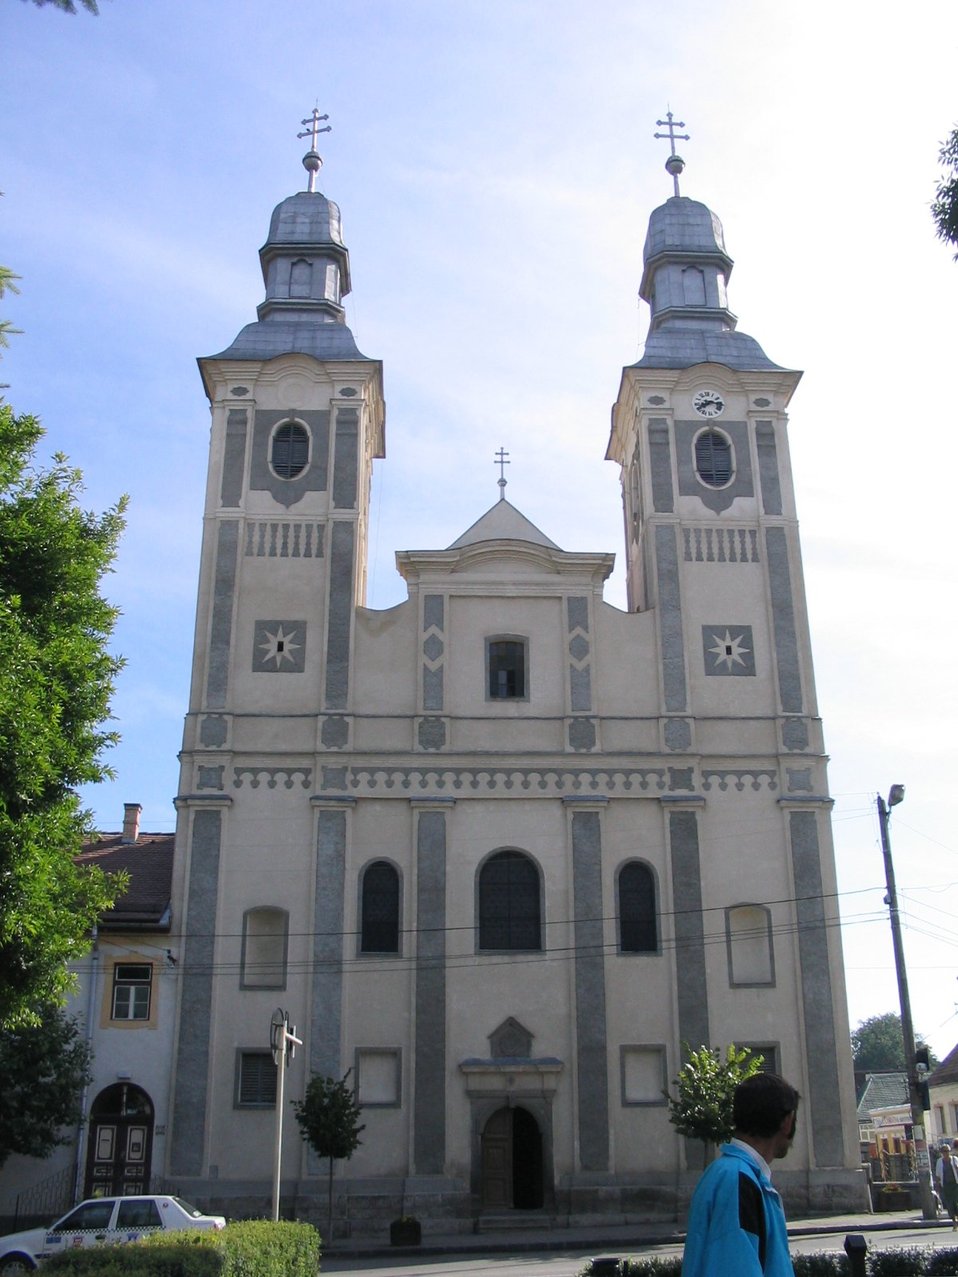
Katolik Church in Odorheiu Secuiesc This is a photo of a historic monument in județul Harghita , classified with number HR-II-m-B-12916.01